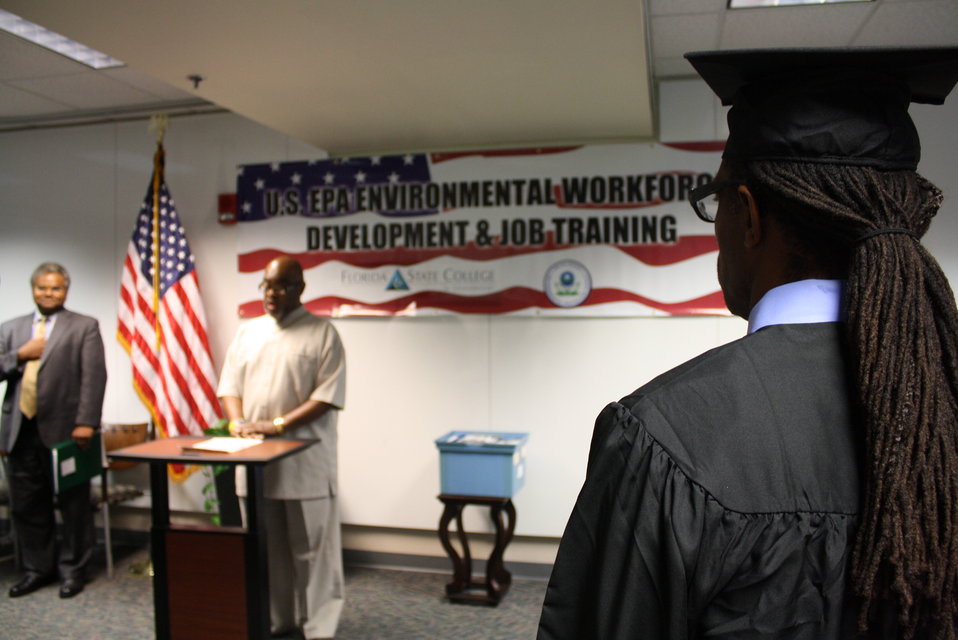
Mathy Stanislaus at Florida State College

A new graduate of Florida State College at Jacksonville’s (FSCJ) Environmental Workforce Development and Job Training class watches Luther Boyd, a former graduate of FSCJ’s brownfields program, sing the national anthem during his graduation ceremony. This environmental training is funded by an EPA grant.